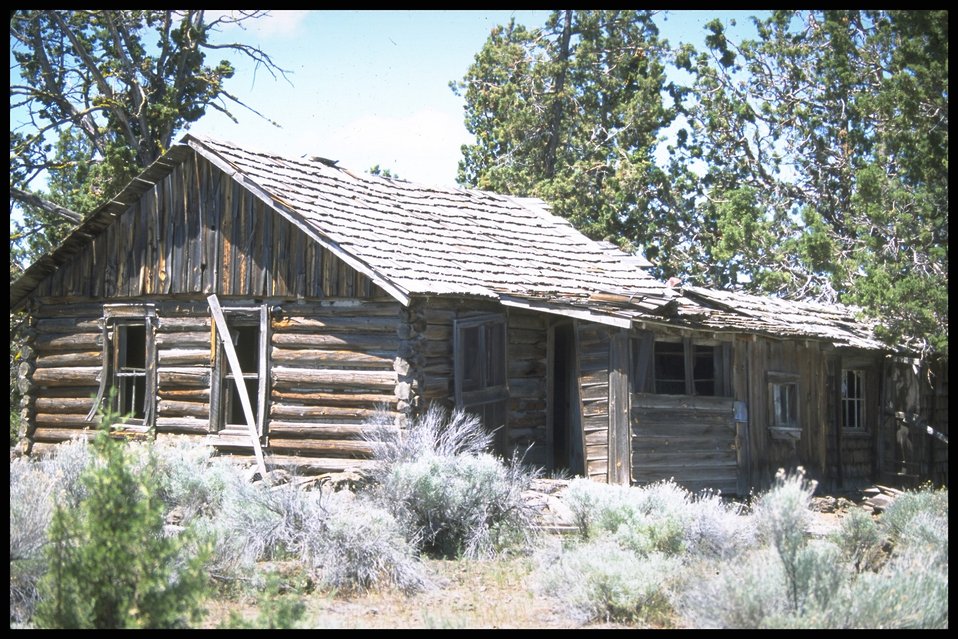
Old House, Lakeview District.